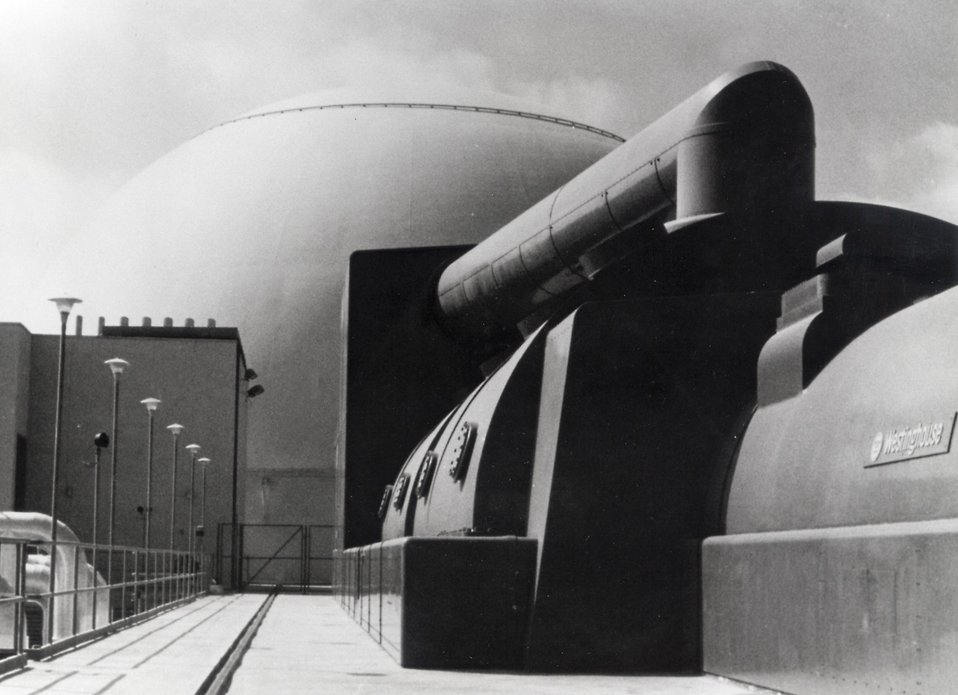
View of the San Onofre Nuclear Reactor and large turbo-generators at San Clemente, California. Circa 1971.